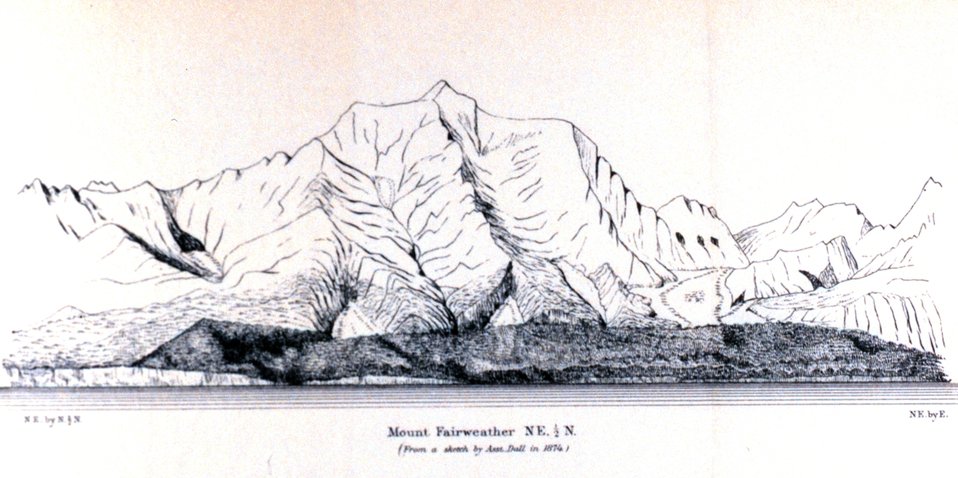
Mt. Fairweather. In: Pacific Coast Pilot Alaska Part I 1883. P. 202. Library call number VK943 .N3 1883.